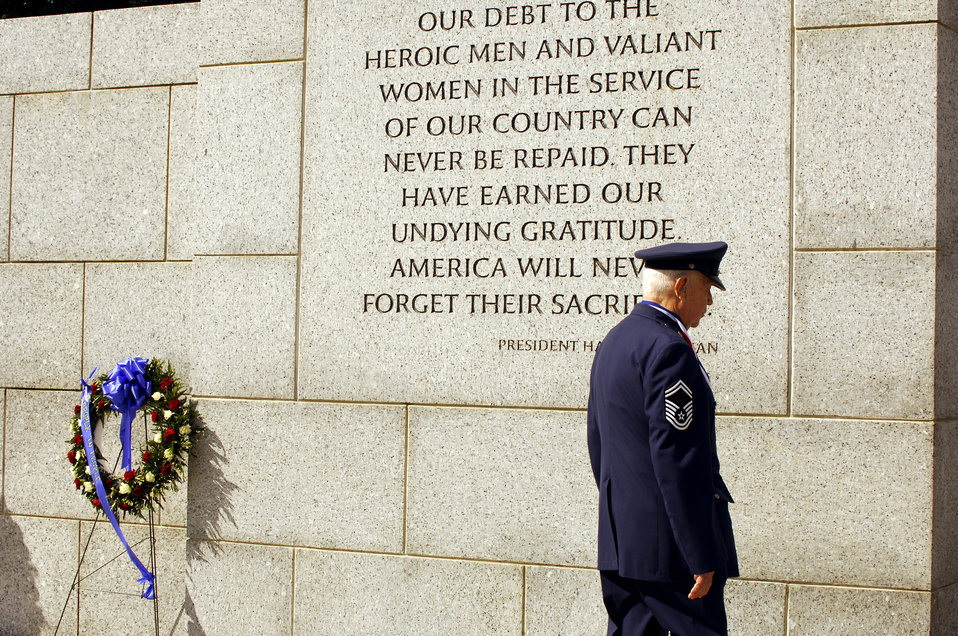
Hero Flight transports 122 WW II veterans in 2007

Retired Senior Master Sgt. Billy Neil reads a quote at the National World War II Memorial during Hero Flight 2007 in Washington, D.C., Sept. 15. Hero Flight is an all-volunteer program that sets up trips to allow as many World War II veterans as possible to visit the National World War II Memorial.